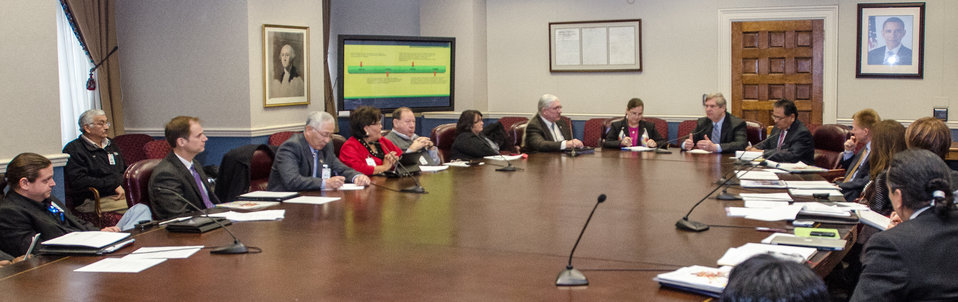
Agriculture Secretary Tom Vilsack speaks during the U.S. Department of Agriculture and American Indian Higher Education Consortium Leadership Group Winter Meeting, at the USDA Whitten Building, Williamsburg Room, in Washington D.C., on Friday, Feb. 8, 2013.